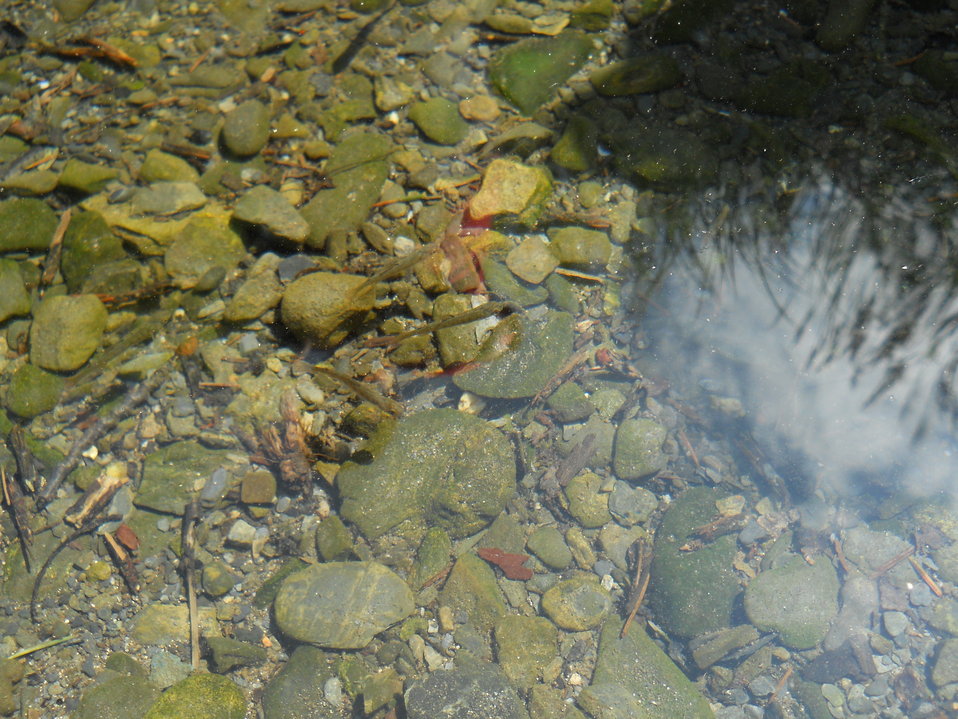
Just Below the Surface

Credit: USFWS
Photo taken by a Salmon Camp participant during a nature photography activity.

Source and Contact: Kodiak National Wildlife Refuge